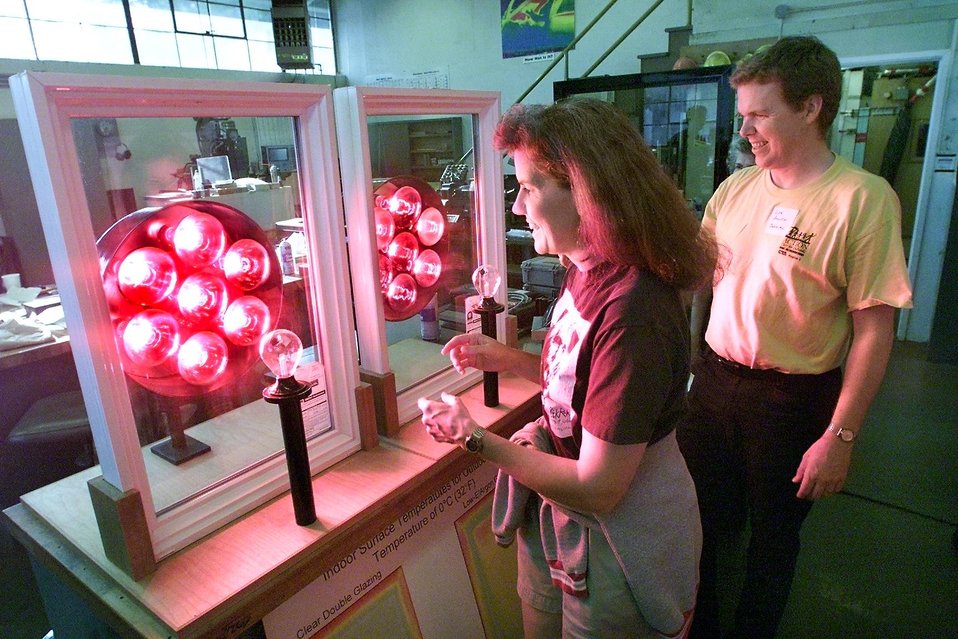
LOW E/ARGON GLASS HEAT TEST COMPARISON AT THE WINDOWS ENVIRONMENTAL LABORATORY AT LBNL.

THE WINDOWS ENVIRONMENTAL LABORATORY AT LAWRENCE BERKELEY NATIONAL LABORATORY IS DEVELOPING TECHNOLOGY THAT WILL CREATE WINDOWS FOR ENERGY CONSERVATION.